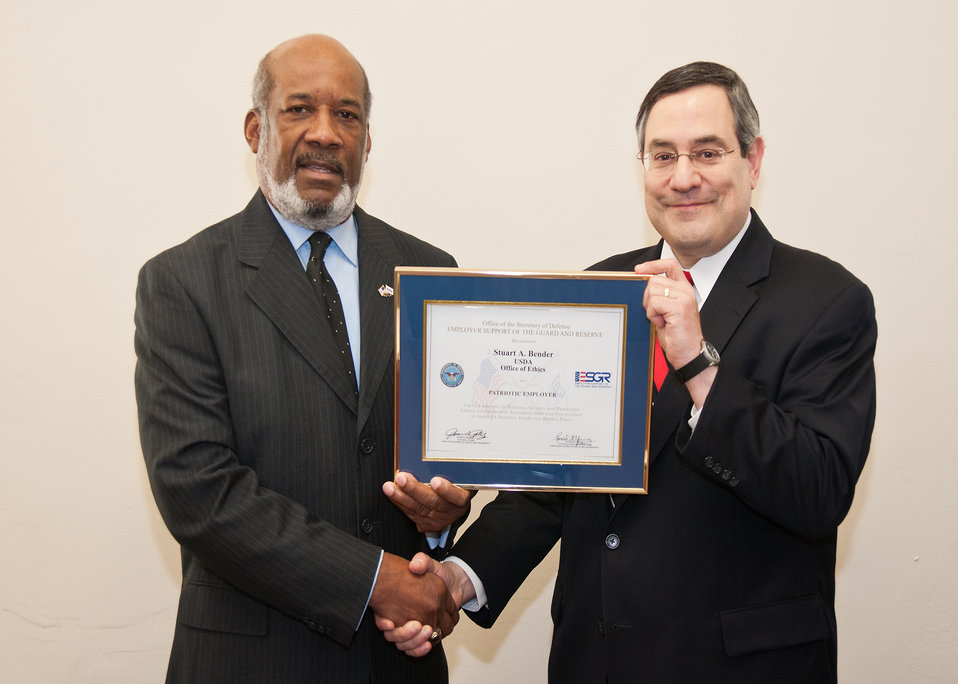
Lewis Williams (left), District of Columbia Committee for Employer Support of the Guard and Reserve (ESGR) and Stuart Bender (right), Director, United States Department of Agriculture Office of Ethics, Office of Human Resources Management. Bender received the Patriot Award from on behalf of the Department of Defense. The award recognizes the outstanding support of Mr. Bender to the Reserve Component of the United States Military Forces.